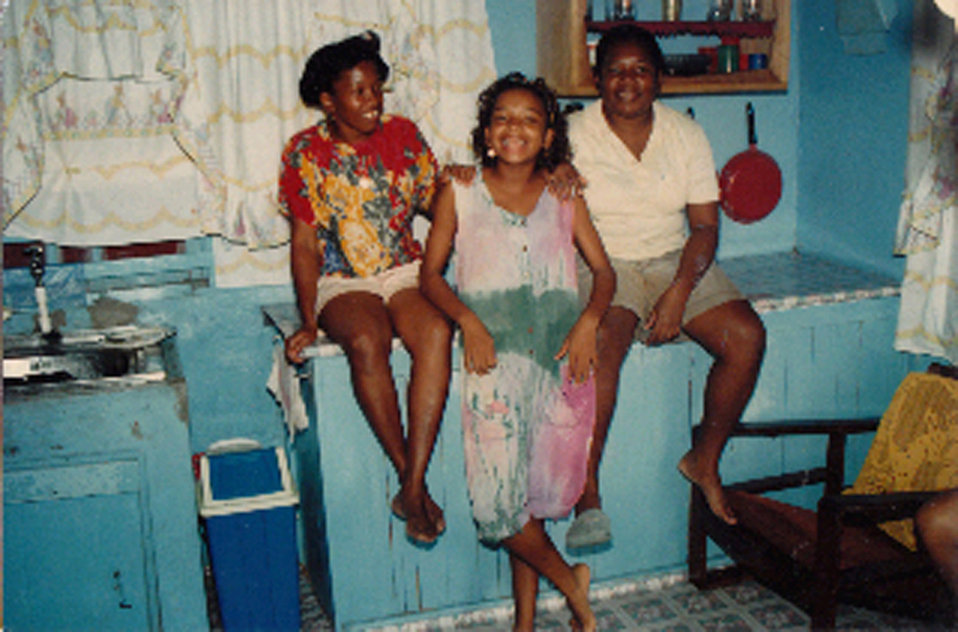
Airman becomes citizen in Pentagon ceremony

Senior Airman Cassandra Obermuller Brandon (center) was born and raised in Guyana, a South American country next to Brazil and Venezuela. She moved to New York City with her father in 1991, but split her time between the two countries throughout the year.